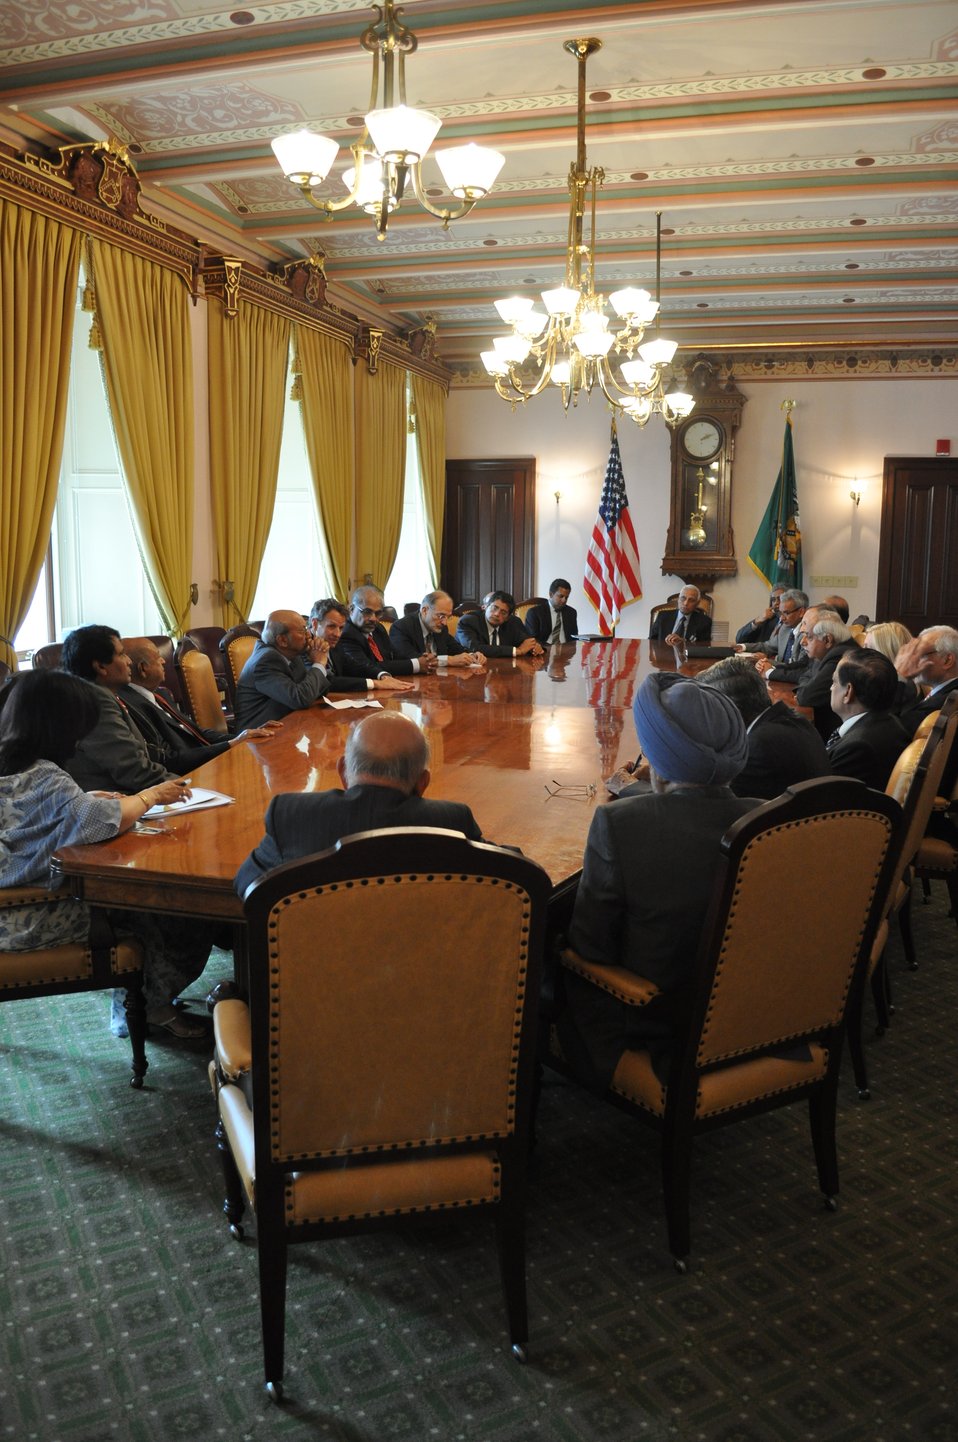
Secretary Geithner meeting with Indian delegation of the U.S.-India Aspen Strategy Group, 8/3/2010

On August 3, 2010, Secretary Tim Geithner met with the Indian delegation of the U.S.-India Aspen Strategy Group to discuss economic and other policy priorities between our two nations.